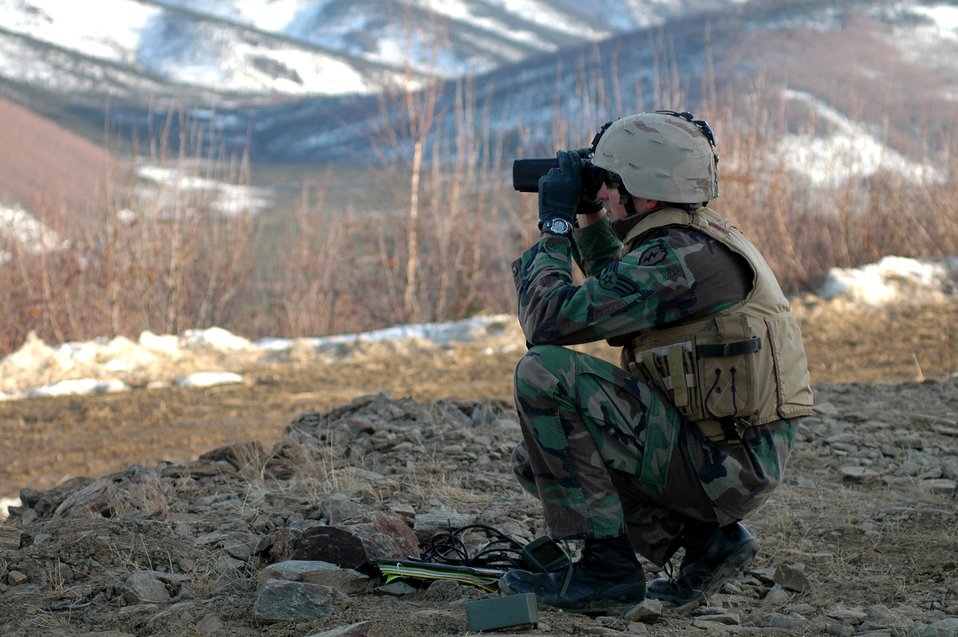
Red Flag-Alaska wraps up

Senior Airman Glenn Wilderman scans the bombing range at Eielson Air Force Base, Alaska, for target distance and directions as his team participates in Red Flag-Alaska on Friday, April 28, 2006. Airman Wilderman is a joint terminal attack controller with the 25th Air Support Operations Squadron at Hickam AFB, Hawaii.